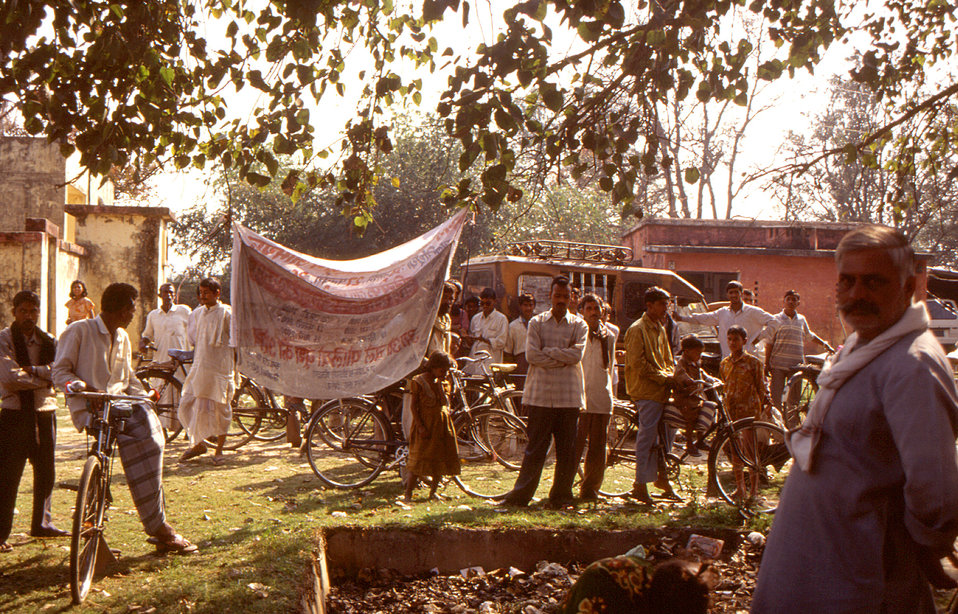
Photographed in 2000 by Chris Zahniser, B.S.N., R.N., M.P.H., a STOP Transmission of Polio (STOP) immunization initiative team member and photographer, this rally outside the Deoria District Health Office proved to be an effective way to interest local residents in the upcoming polio immunization day. Appearing at the gathering were musicians and motivational speakers, in order to promote the event. At the time, Ms. Zahniser was assigned to the state of Uttar Pradesh in northern India, and spent three months working in the Districts of Gorakhpur and Deoria.